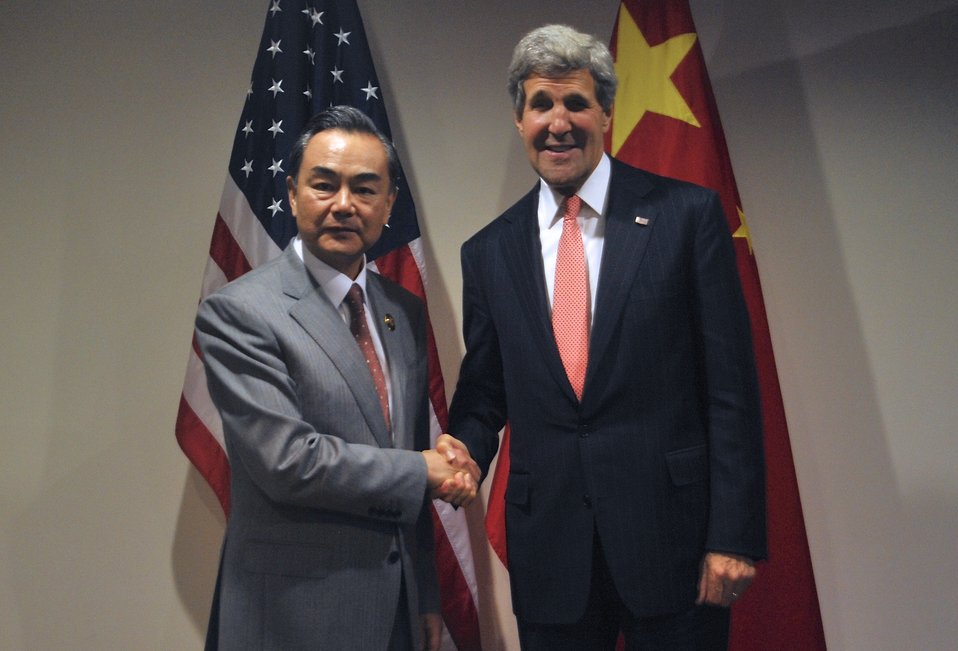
Secretary Kerry Meets With Chinese Foreign Minister Wang

U.S. Secretary of State John Kerry shakes hands with Chinese Wang Yi before a bilateral discussion at the ASEAN ministeral meeting in Bandar Seri Begawan, Brunei, on July 1, 2013.